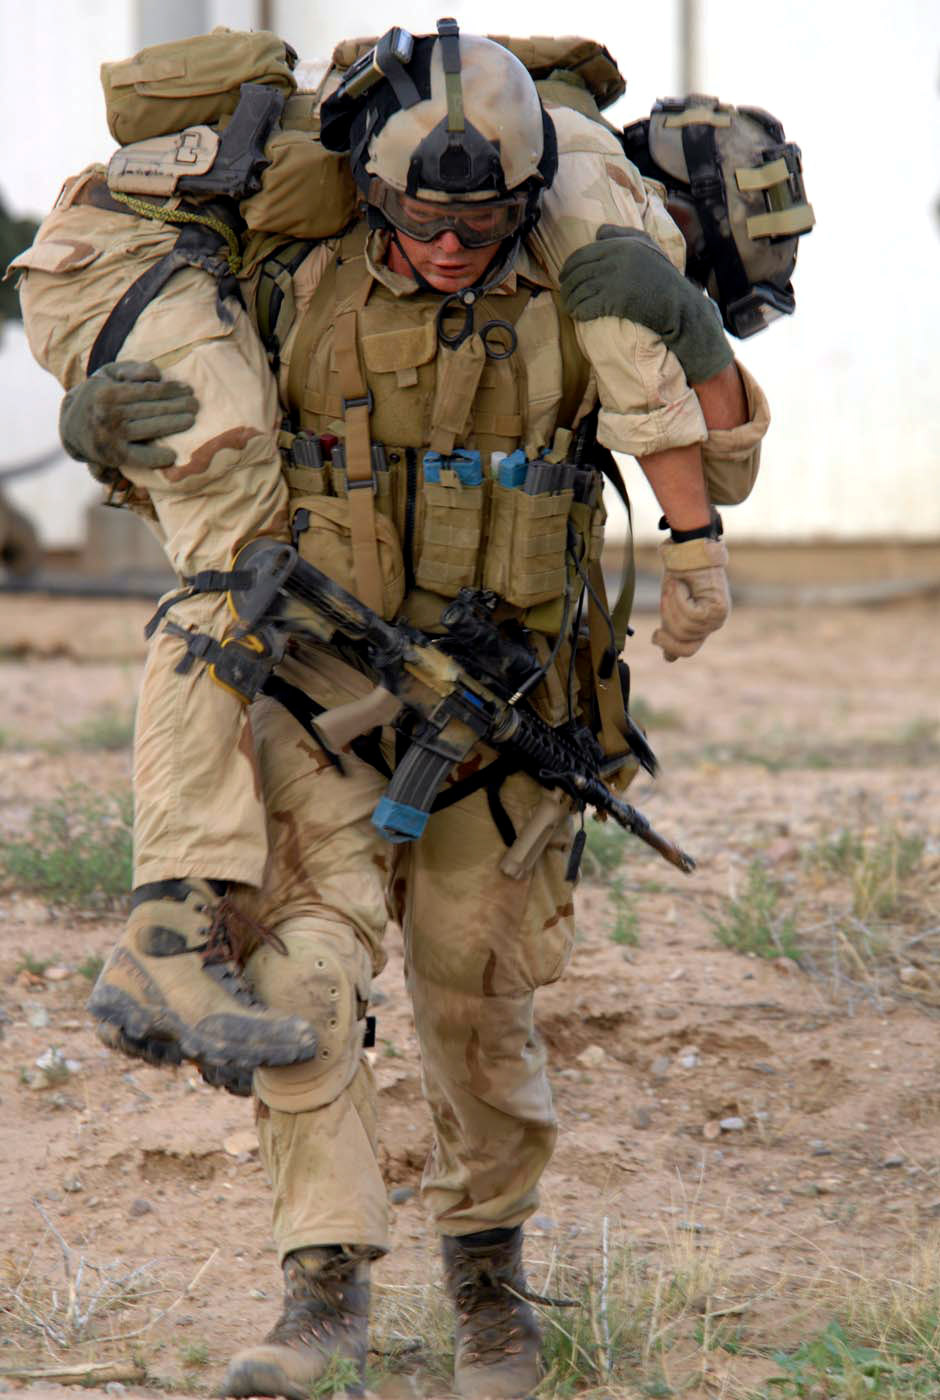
Angel Thunder 2007

Senior Airman Dwight Funk carries a simulated survivor out of a house during a training scenario July 13 at Playas, N.M., that is part of Exercise Angel Thunder 2007. Angel Thunder is a combat search and rescue task force exercise designed to test theater spin-up capabilities and examine the integration of all Air Force assets in mission planning procedures and mission execution. Airman Funk is a pararescueman from the 58th Rescue Squadron at Nellis Air Force Base, Nev.